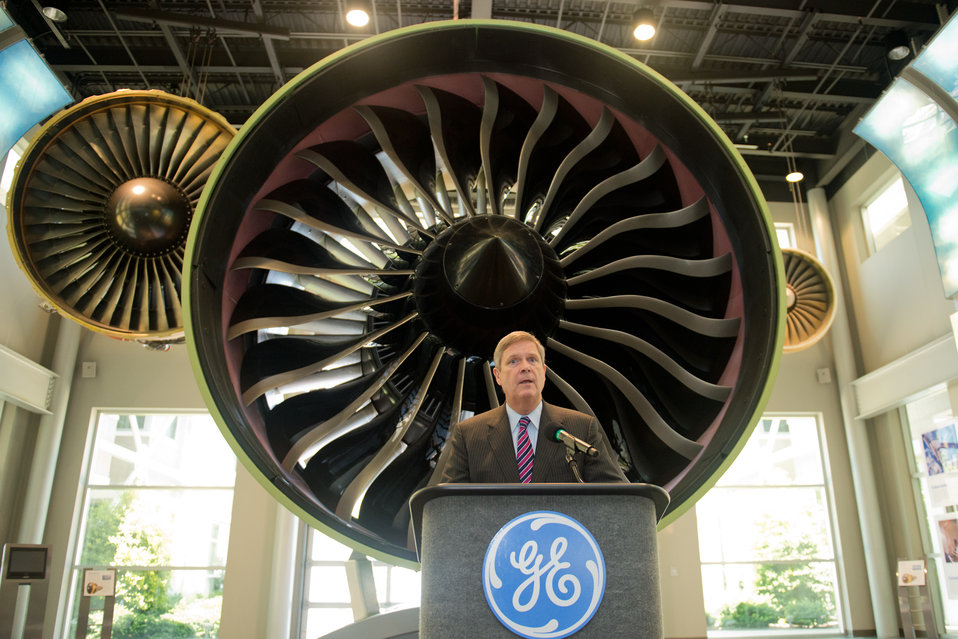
Agriculture Secretary Tom Vilsack stands in front of General Electric’s GE 90-115B, the engine that powers the Boeing 777 for a press briefing following a tour of G.E. Aviation Headquarters at the company’s Learning Centre in suburban Cincinnati, OH on Wednesday, June 27, 2012. Secretary Vilsack was in Ohio to highlight the U.S. Department of Agriculture’s (USDA) collaboration with the Ohio Aerospace Institute, air carriers and producer groups to develop a Midwest-regional approach to providing renewable jet fuel at G.E Aviation’s Cincinnati-area facilities.